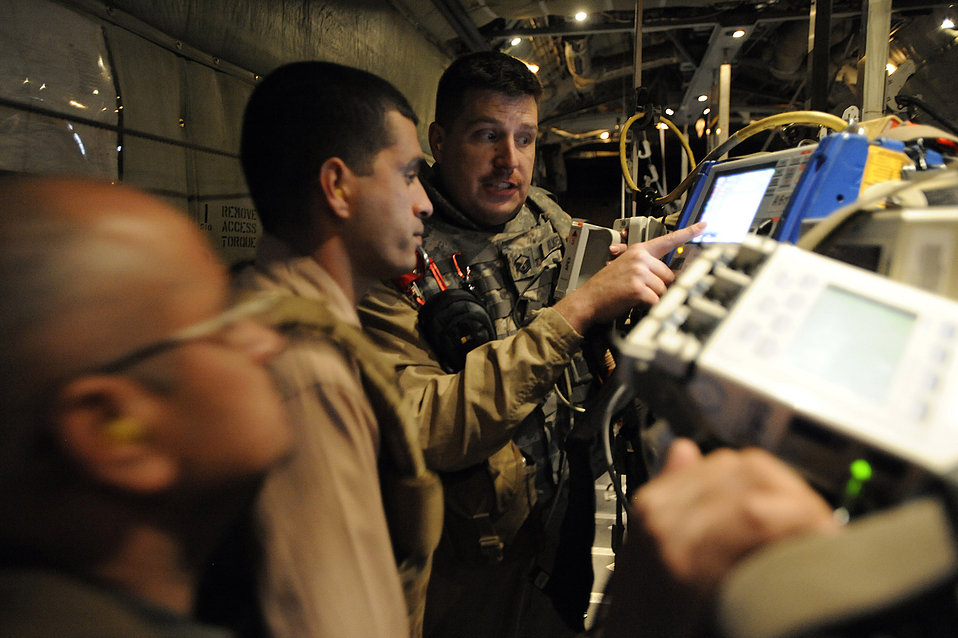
Iraqi doctors study American aeromedical evacuation program

Master Sgt. Scott Wilkes (right) demonstrates a defibrillator and heart monitor to Iraqi air force Capt. (Dr.) Mohammed (middle) and Iraqi air force Maj. (Dr.) Abdul-Razaq during an aeromedical evacuation mission over Iraq Nov. 7. The two Iraqi doctors from Iraq's Ministry of Defense accompanied the Air Force mission to study aeromedical evacuation procedures so that they can establish an aeromedical evacuation service for the Iraqi air force. Sergeant Wilkes, a medical technician with the 332nd Expeditionary Aeromedical Evacuation Flight, is deployed from McGuire Air Force Base, N.J.